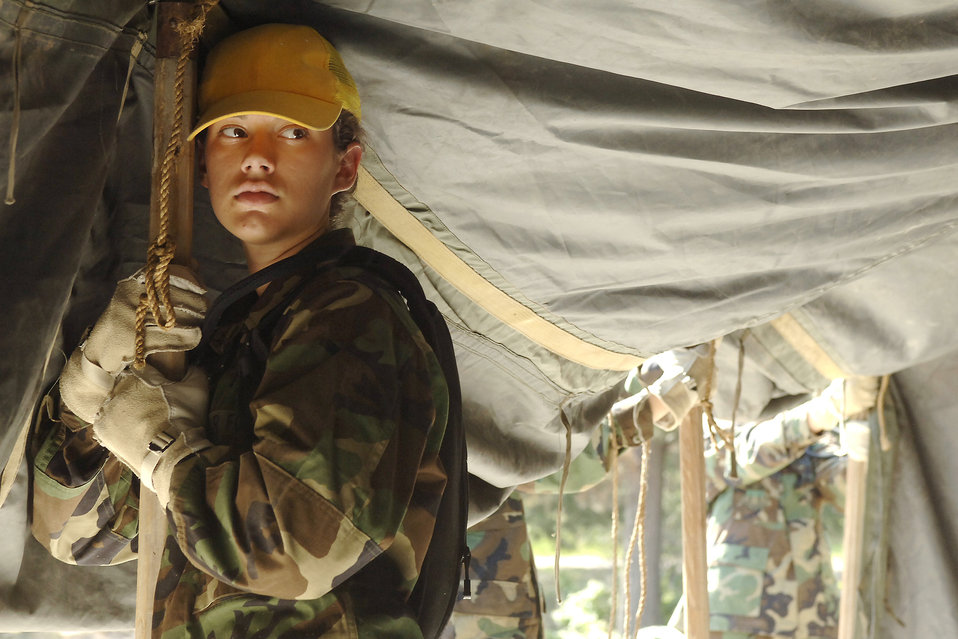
Is the pole straight?

Air Force Academy basic cadet Sarah Bangley's first task during a two-week training exercise in Jacks Valley at the U.S. Air Force Academy, Colo., was to set up tents. Once the housekeeping chores are done, however, the real challenges begin.